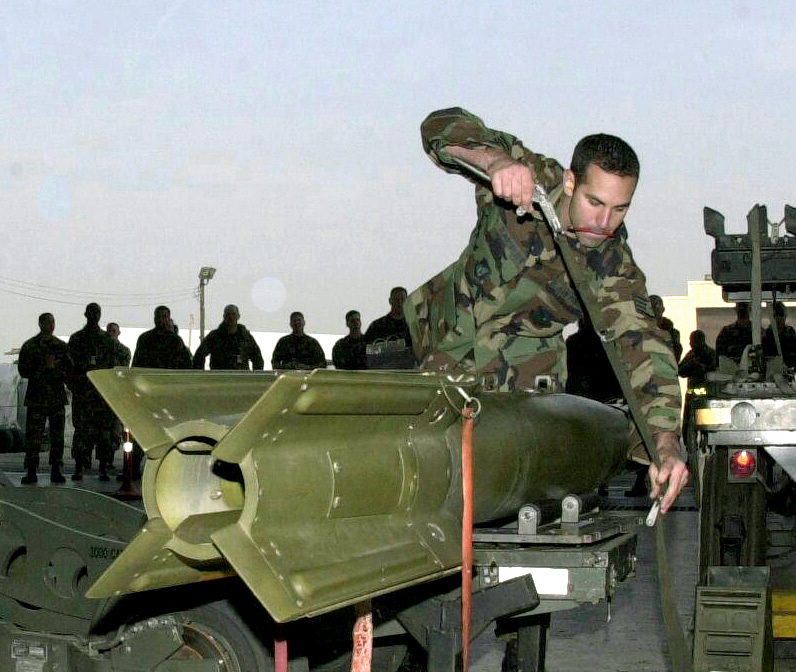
Load crew competition

OSAN AIR BASE, South Korea -- Staff Sgt. Paul Kaehler secures a guided bomb unit-12 onto a jammer during a load crew competition here Nov. 11.